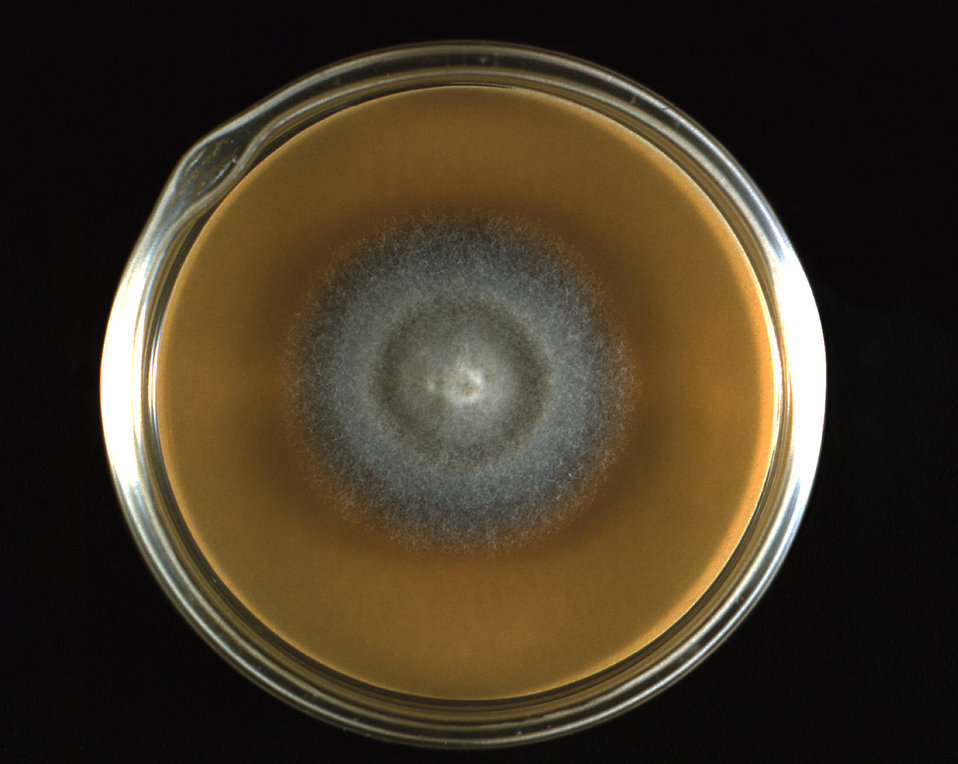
This 1961 photograph depicted a Petri dish in which a colony of Madurella grisea fungal organisms were being cultivated. Note the classic wooly colonial morphology, as well as yellow-brown coloration, as viewed from the front. If one were to view the dish from the inferior surface, or the back, one would note a dark brown colonial coloration.